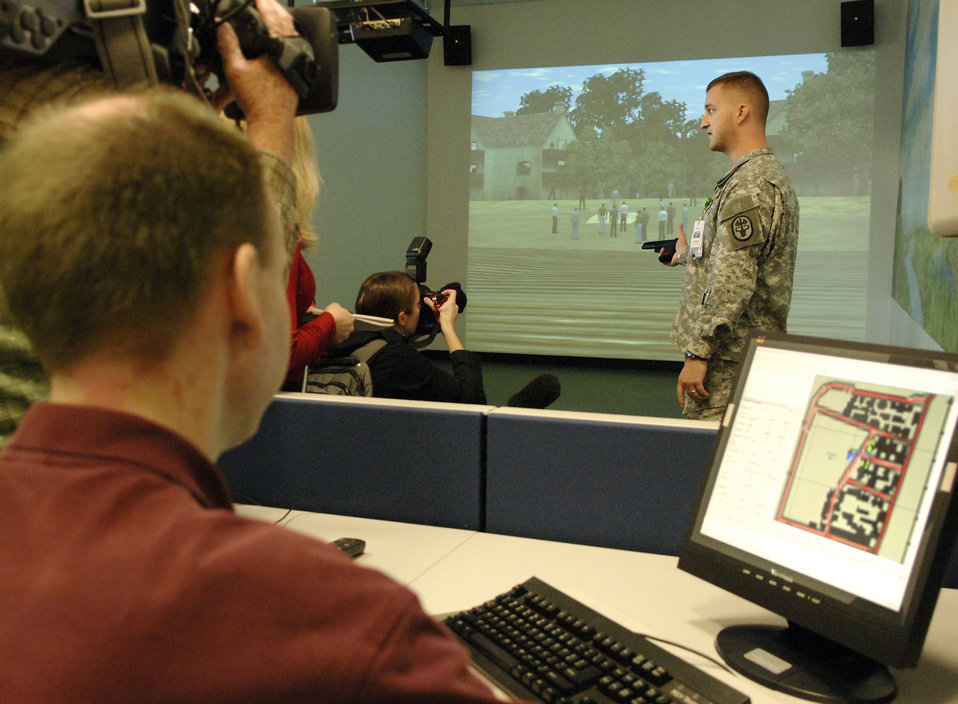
Center for Intrepid

Capt. Scott Kulla demonstrates firing a replica of the 9 mm pistol using the firearms training simulator, a virtual firing range at the Center for the Intrepid in San Antonio Jan. 29.